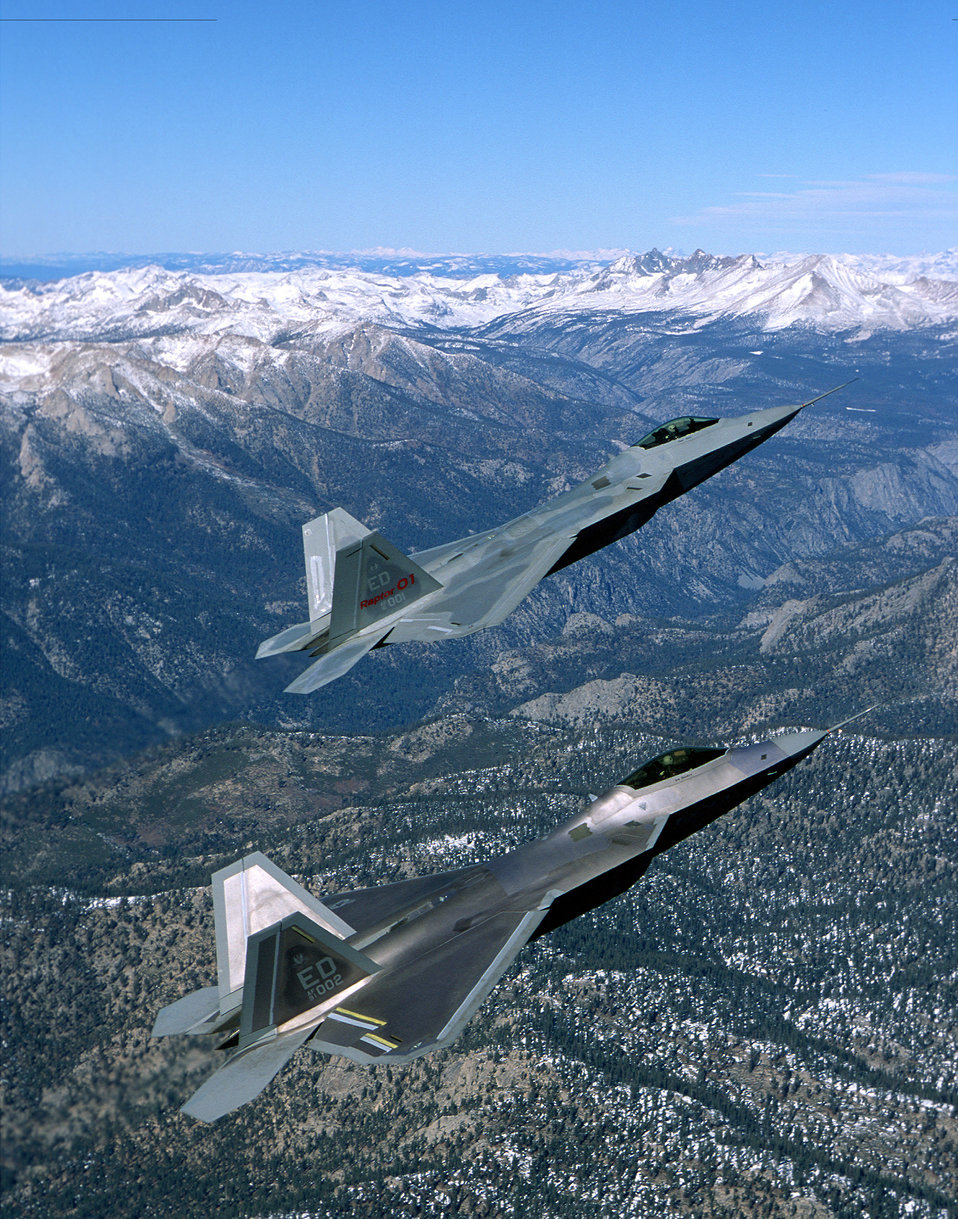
Raptor pair

WASHINGTON -- Boeing is teamed with Lockheed Martin and Pratt & Whitney to design and build the F/A-22. Boeing is responsible for the wings, aft fuselage (including the structures necessary for engine and nozzle installation), avionics integration and tests, radar development, the training system, flight-test development and management, the fire-protection system and the life-support system.